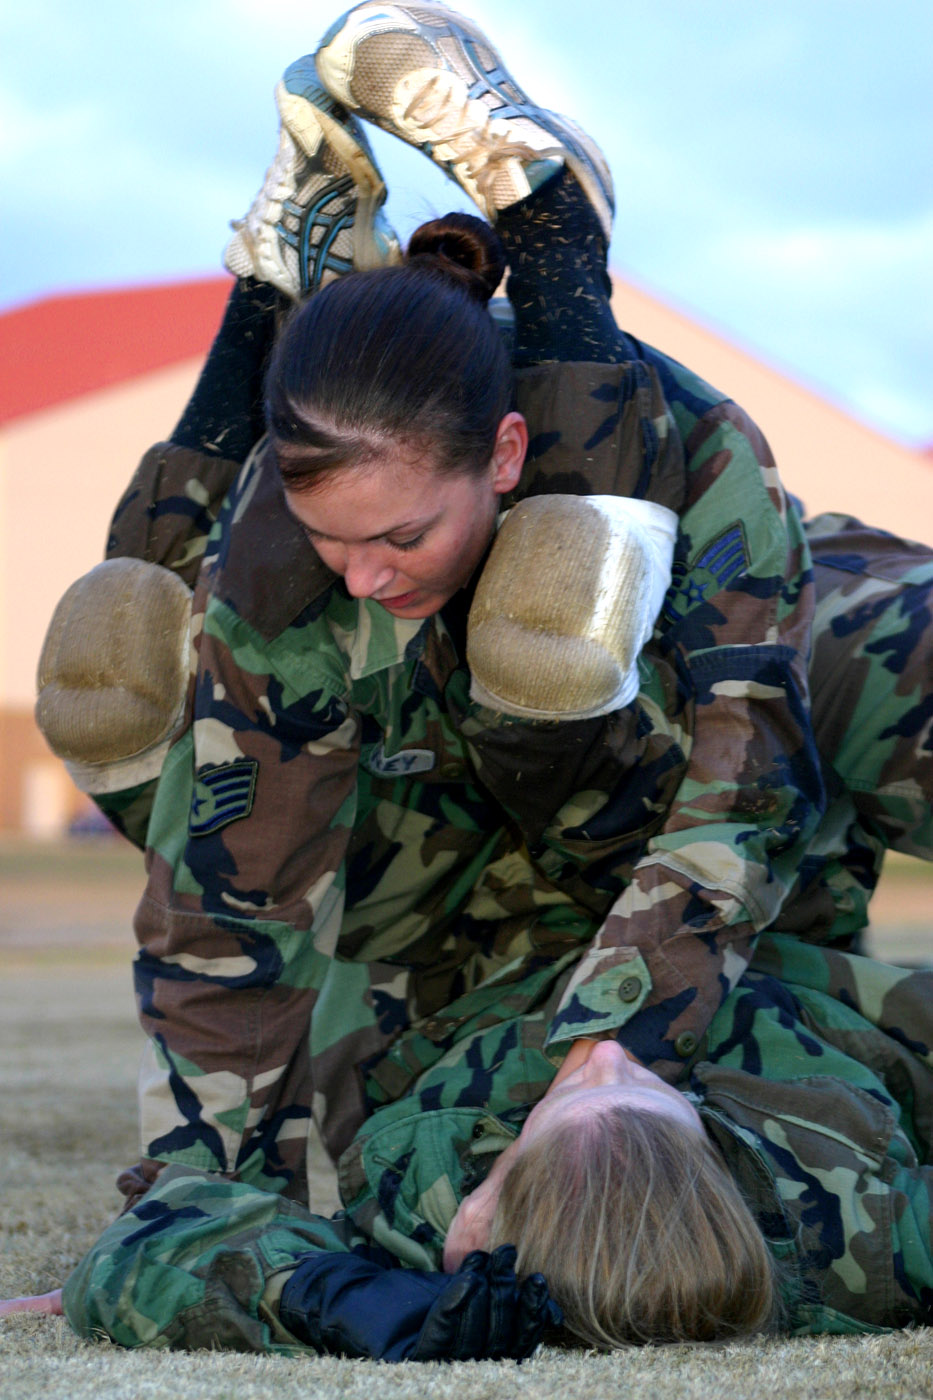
OTS starts unarmed combat training

Staff Sgt. Nicole Humphrey demonstrates self-defense techniques on Officer Training School basic trainee Amy Natalini during the school's first Air Force Combative Program course held Jan. 29 at Maxwell Air Force Base, Ala. More than 70 hours of expeditionary skills training is now being taught at the school. The first module focuses on ground fighting and basic jujitsu-style grappling moves while the second and third modules are specialized courses for certain career fields such as tactical air controllers and combat controllers. Sergeant Humphrey is a training instructor with the 22nd Training Squadron.